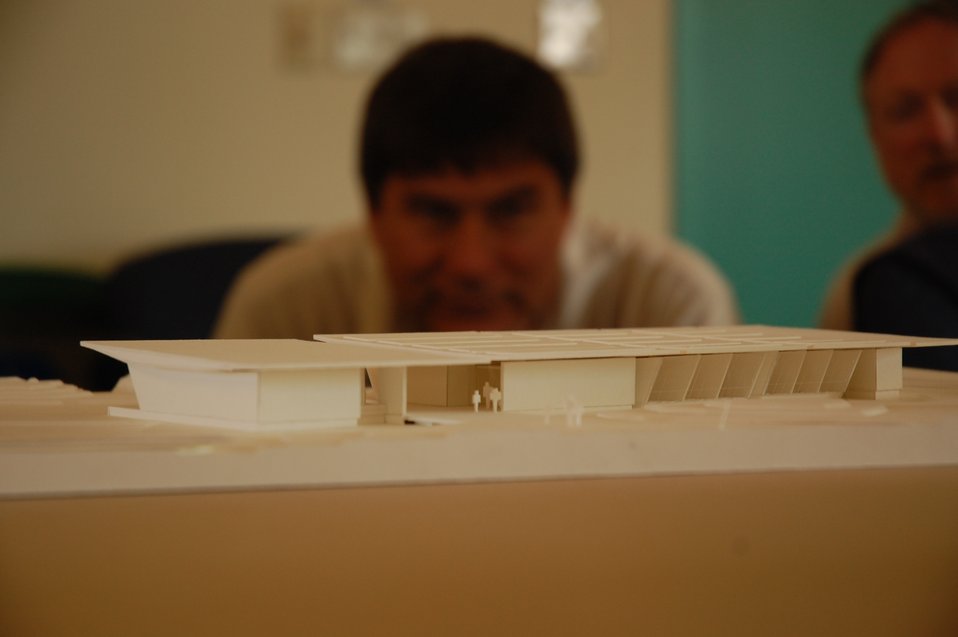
San Diego Complex Headquarters model

Project Leader Andy Yuen and Deputy Project Leader Slader Buck examine the final model for the new ARRA-Funded Adminstrative Headquarters (building on the right), and Resource Room classroom (building on the left).